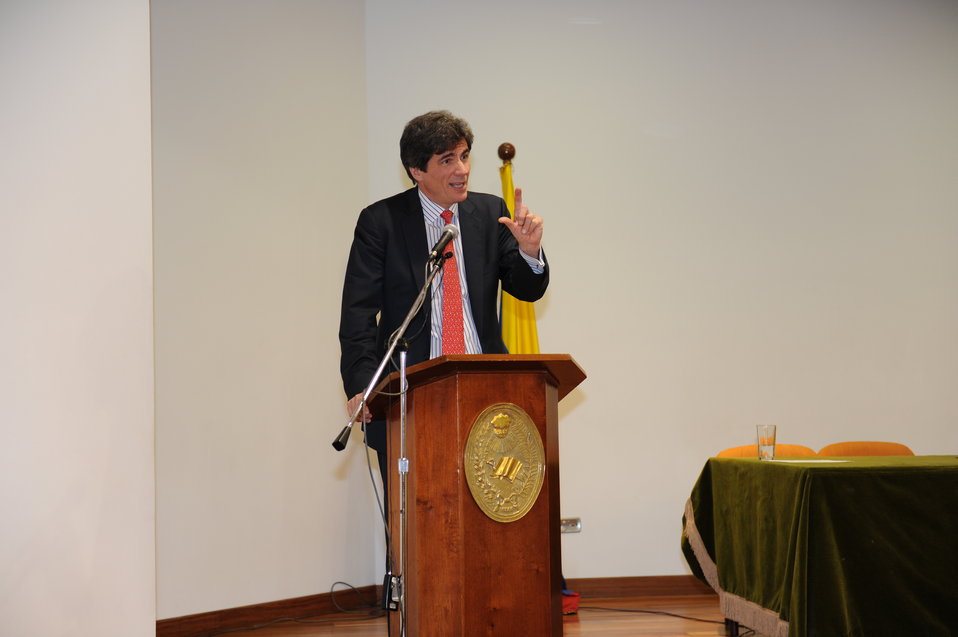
Assistant Secretary Fernandez Speaks With Colombian Students

Assistant Secretary of State for Economic and Business Affairs Jose Fernandez speaks to students at El Externado University in Bogota, Colombia, about the U.S.-Colombian economic relationship on February 15, 2012.